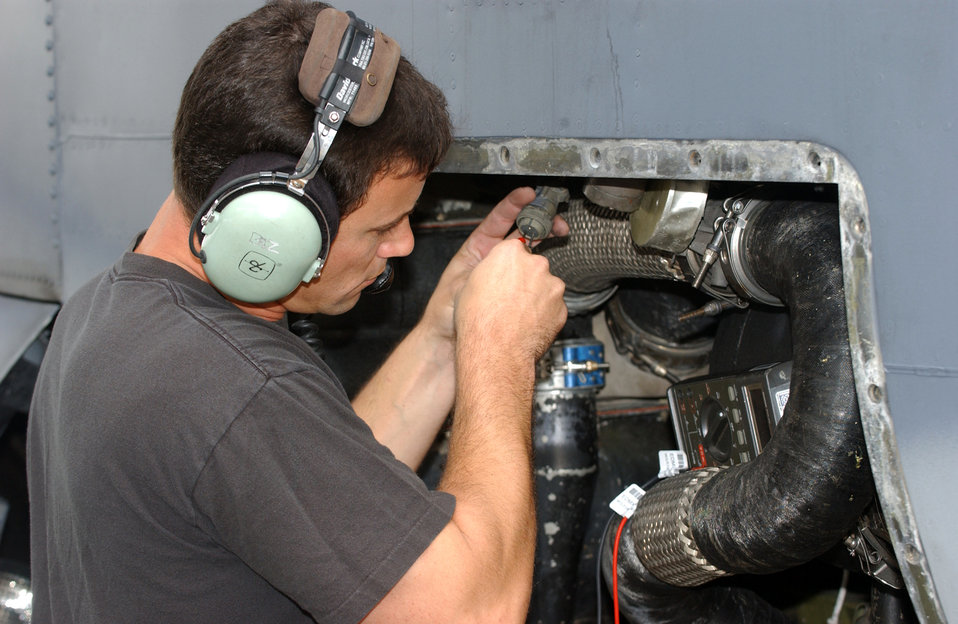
Reservists arrive in Uruguay for exercise

PUNTA DEL ESTE, Uruguay -- Tech. Sgt. Mike Biseinere works on the cargo compartment air conditioning system of an MC-130P Combat Shadow while on temporary duty here supporting Unitas 2004. The exercise involves navies from the United States, Spain, Brazil, Uruguay and Argentina, plus the U.S. Coast Guard and U.S. Air Force. Sergeant Biseinere is assigned to the 5th Special Operations Squadron at Eglin Air Force Base, Fla.